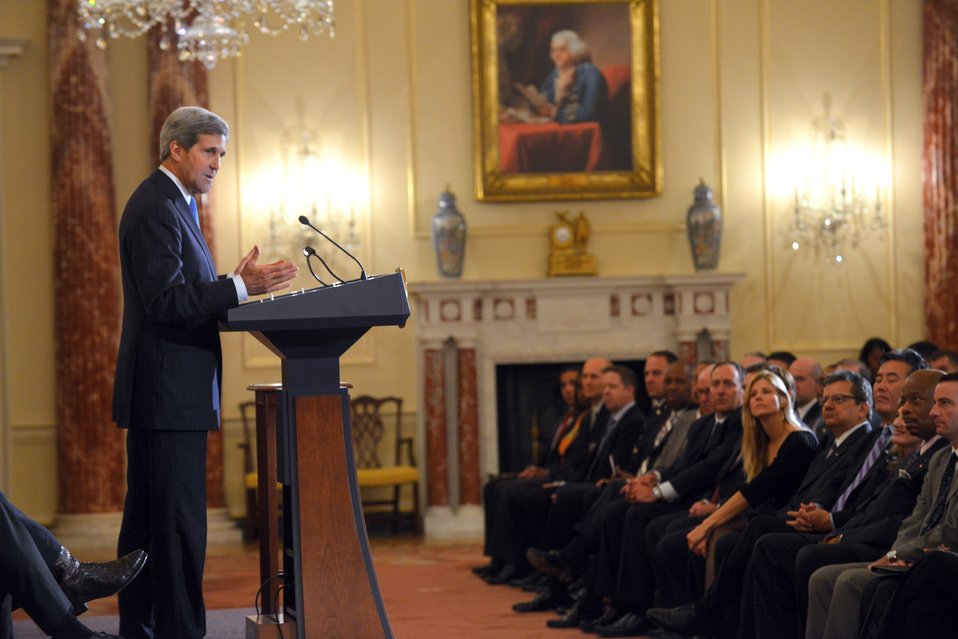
Secretary Kerry Delivers Remarks at a Veterans Partnership Announcement

U.S. Secretary of State John Kerry delivers remarks at a Veterans Partnership Announcement at the U.S. Department of State in Washington, D.C., on October 31, 2013.